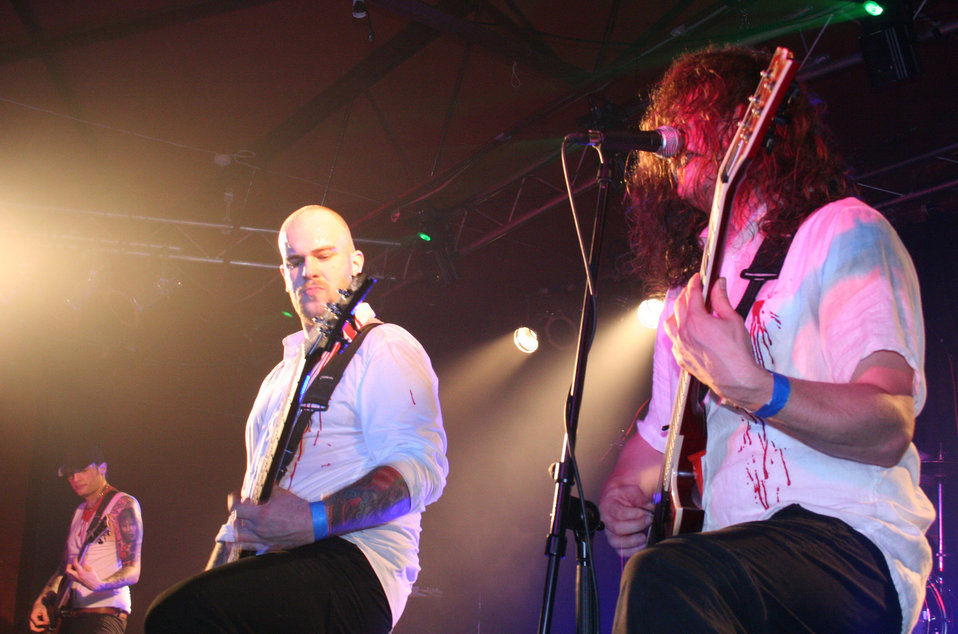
Caliban, performing live in Black Friday